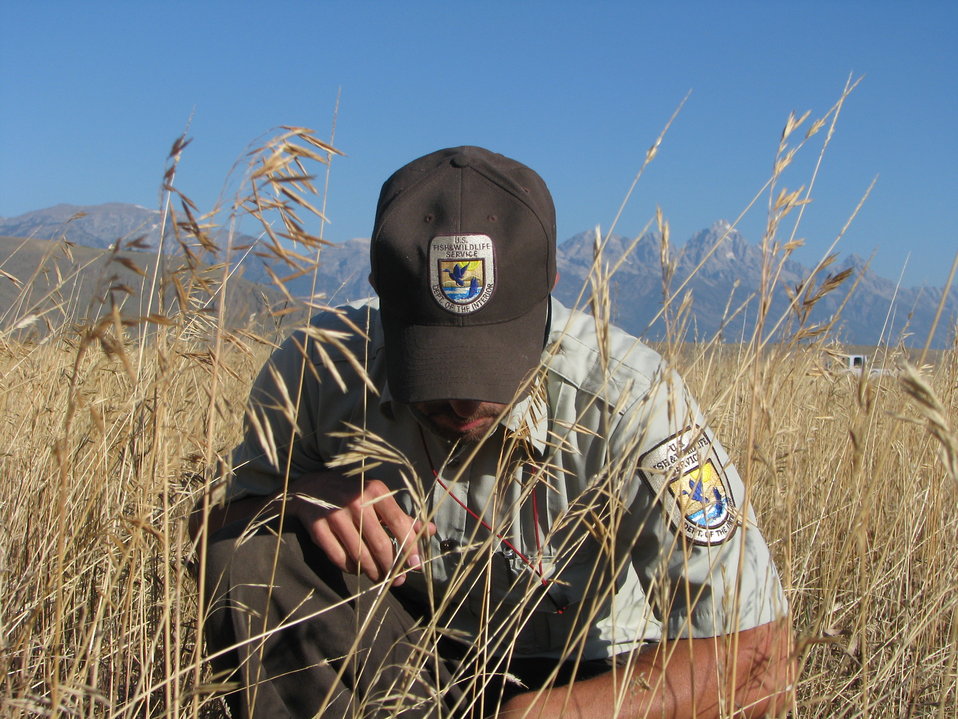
Measuring the Season's Forage Production

Refuge Biologist Eric Cole kneels in a field of smooth brome grass during forage production sampling. At least one sample is taken from each type of the various plant communities found on the refuge during the survey.